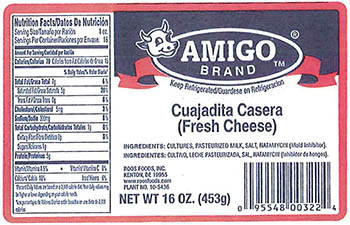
RECALLED – Variety of cheeses

February 23, 2014 – Product Recall – Roos Foods Voluntarily Recalls Variety of Cheeses (listed below) Due to Possible Health Risk.